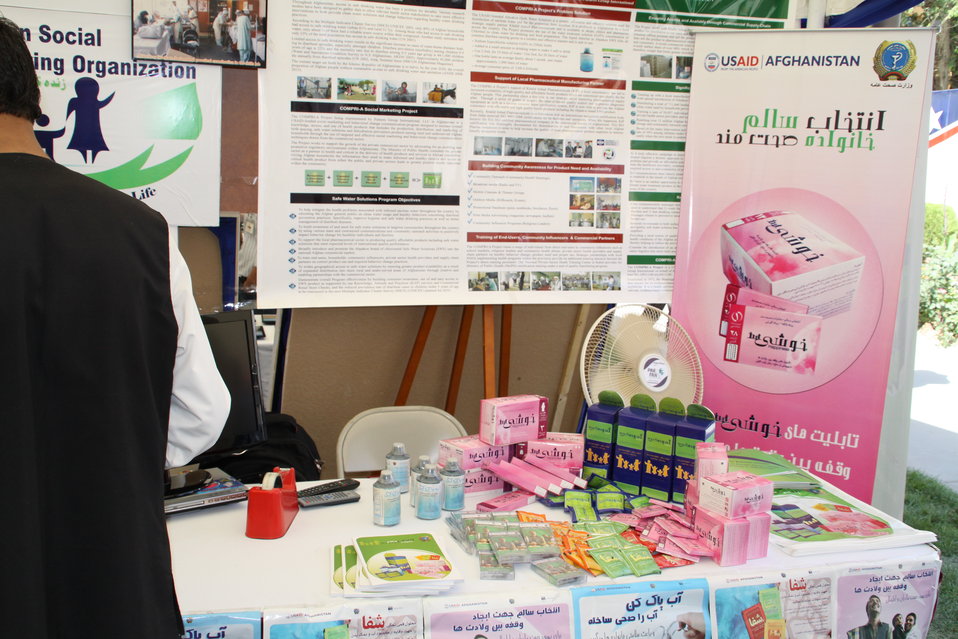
Kabul Official July 4th Celebration